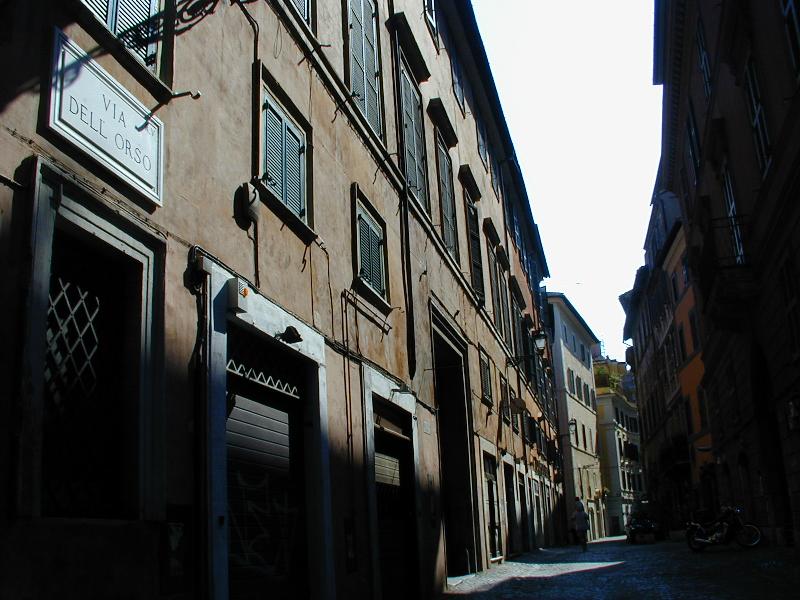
000815 5 v dell orso